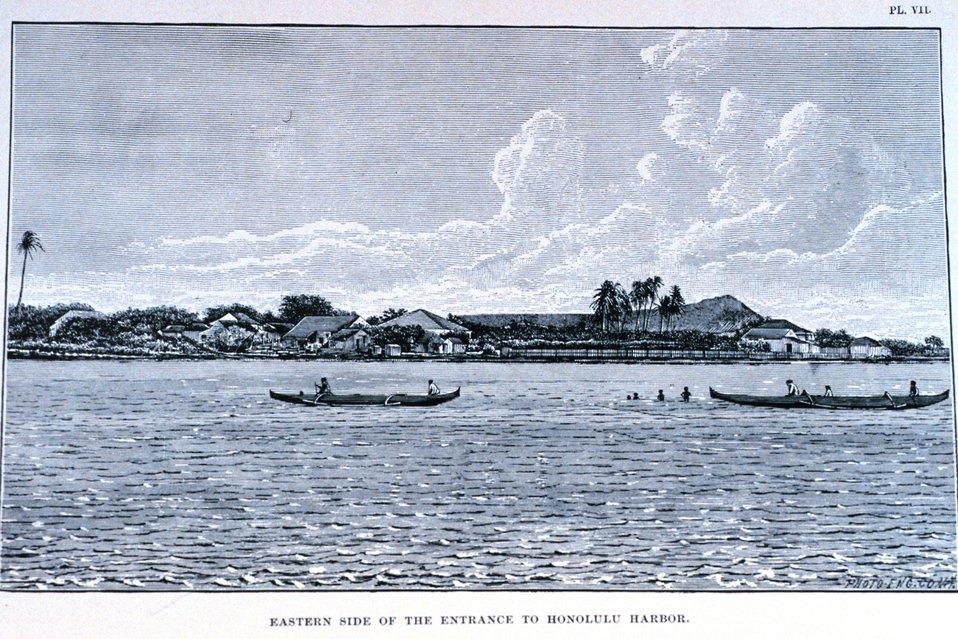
'Eastern Side of the Entrance to Honolulu Harbor', Plate VII. In: 'Coral Reefs of the Hawaiian Islands' by Alexander Agassiz. April 1889. Bulletin of the Museum of Comparative Zoology, at Harvard College. Vol. XVII. No. 3. Library Call Number G161 A26.